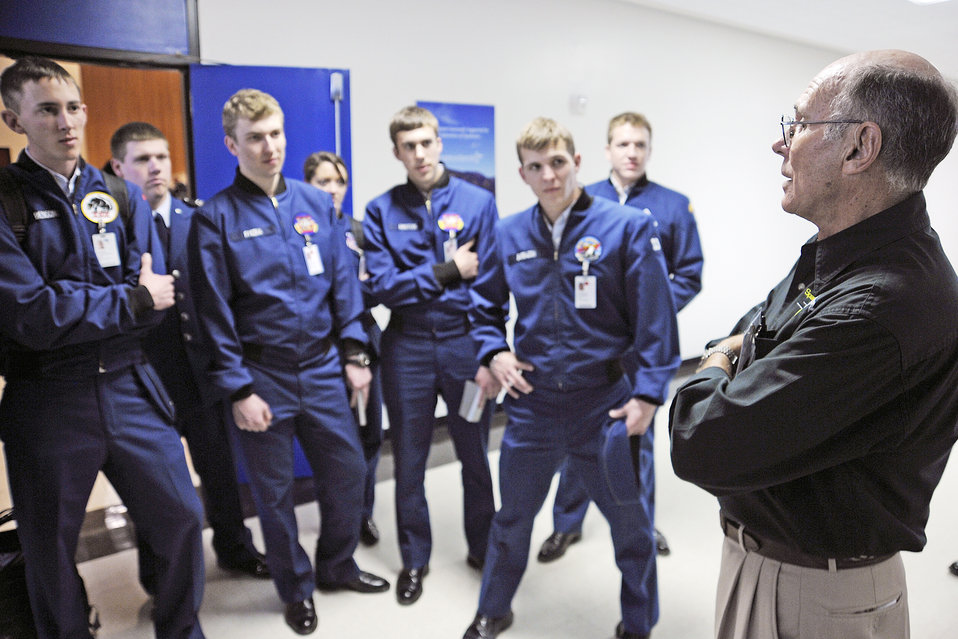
Speakers motivate cadets

Mike Melvill, a commercial test pilot, speaks to cadets during a session break at the 17th-annual National Character and Leadership Symposium at the U.S. Air Force Academy Feb. 18, 2010. The annual event continues to be regarded as one of the premier national symposiums in the area of character development. Mr. Melvill is holder of six different aeronautical ratings and the nation's first commercial astronaut after flying SpaceShipOne to above 100 kilometers in 2004.